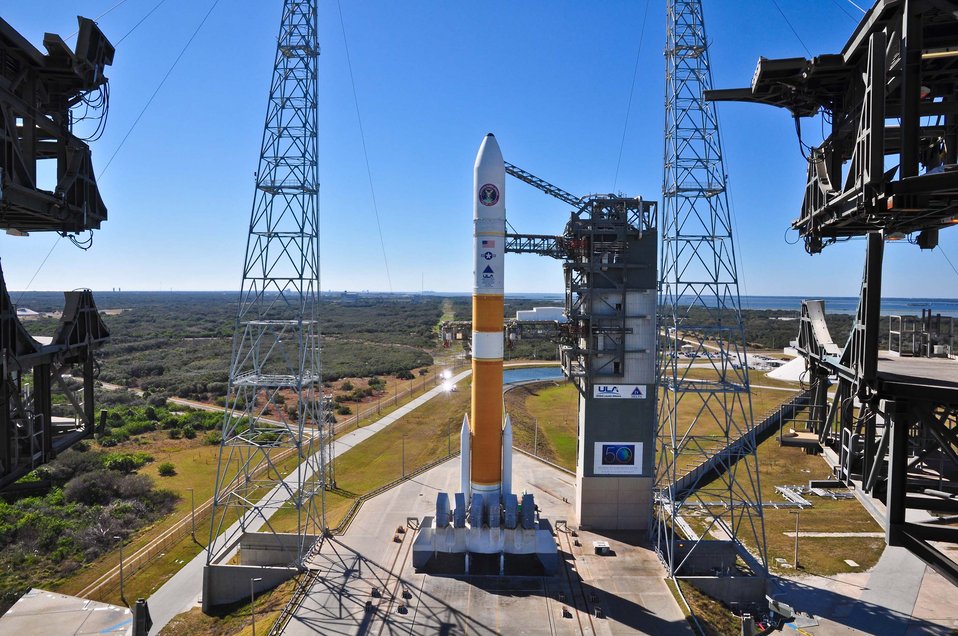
Ready to launch

A United Launch Alliance Delta IV-Medium rocket carrying the fourth Wideband Global SATCOM satellite is rolled out in preparation for launch Jan. 19, 2012, from Cape Canaveral Air Force Station, Fla. WGS-04 is the first craft in the program's upgraded Block 2 series, which adds a radio frequency bypass capability designed to support airborne intelligence, surveillance and reconnaissance platforms requiring ultra-high bandwidth and data rates.